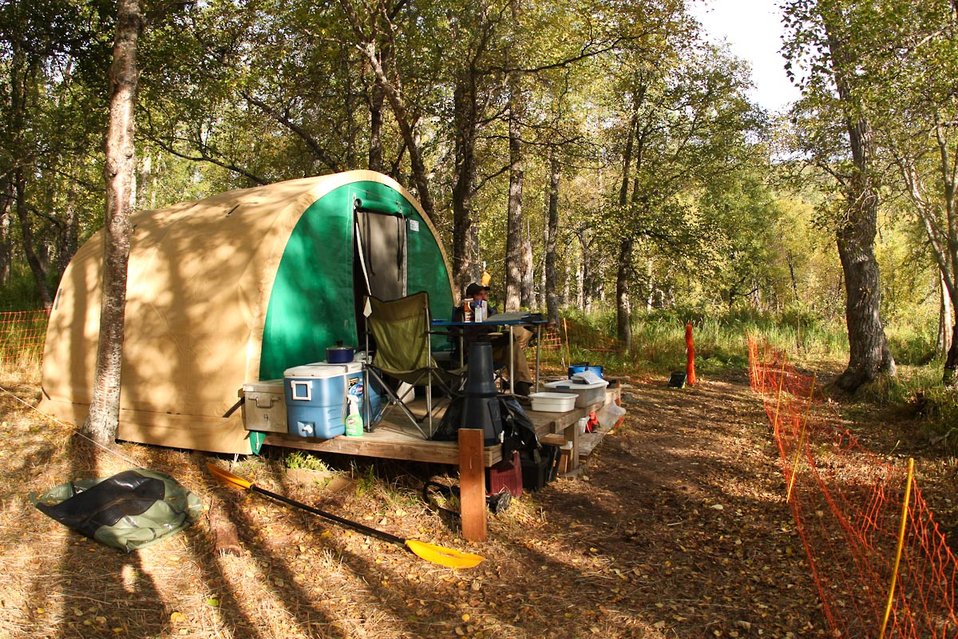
Park Ranger camp on Uganik Lake

Lisa Hupp/USFWS
For the past several years, Kodiak Refuge has conducted a Visitor Use Survey of during the peak silver salmon fishing season in late August-Late September on the Uganik River.
Source: Kodiak NWR